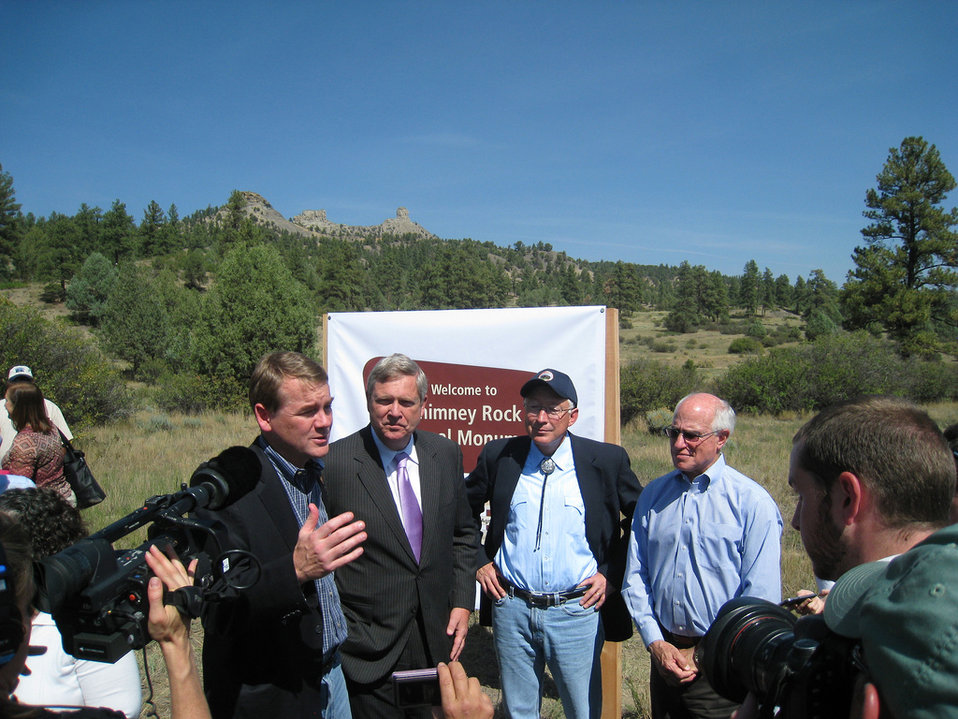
(L to R) Senator Michael Bennet (CO), Agriculture Secretary Tom Vilsack, Interior Secretary Ken Salazar, and Agriculture Under Secretary Natural Resources and Environment Harris Sherman speak to the press at the at the dedication of Chimney Rock as a National Monument in the San Juan National Forest in Southwest Colorado on Friday, Sept. 21, 2012. Chimney Rock is of great spiritual importance to Pueblos and other Tribes in the southwest corner of Colorado. With its twin sandstone pillars and its massive Chaco- style masonry walls perched 1,000 feet above the Piedra River Valley the monument protects a landscape important to the continuation of traditional cultural practices of the modern Puebloan Indians.